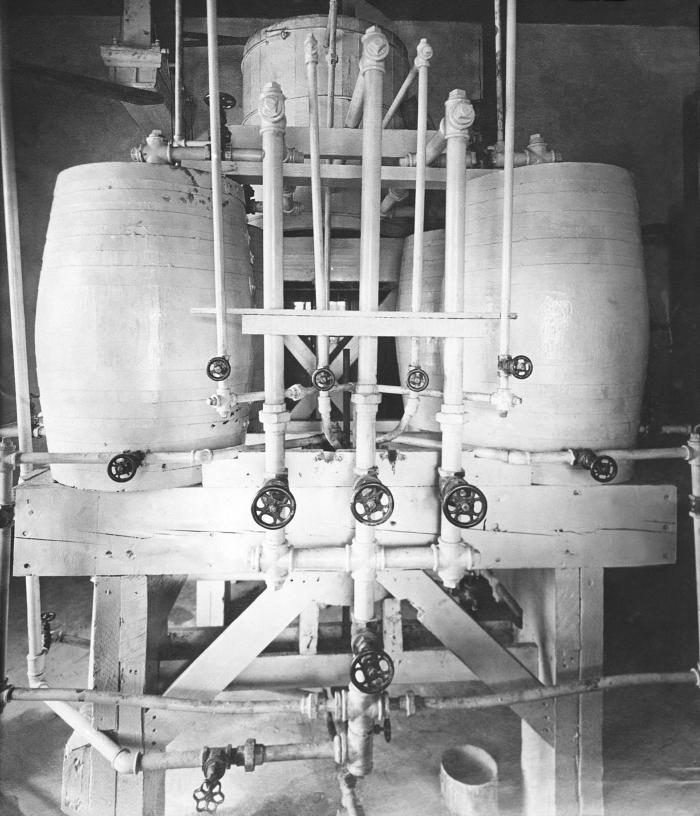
In this historic 1912 photograph, some of the interior machinery was revealed inside a hypochlorite plant in Stillwater, Minnesota. This device acted as an integral component of water filtration system for the town's potable water supply.